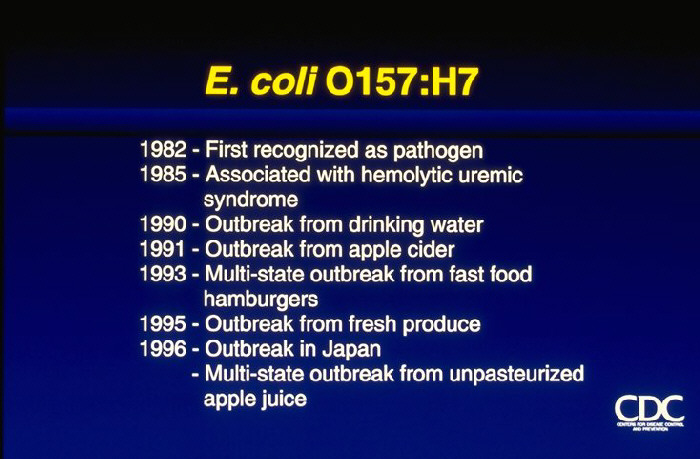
E. coli O157:H7 (chronology)